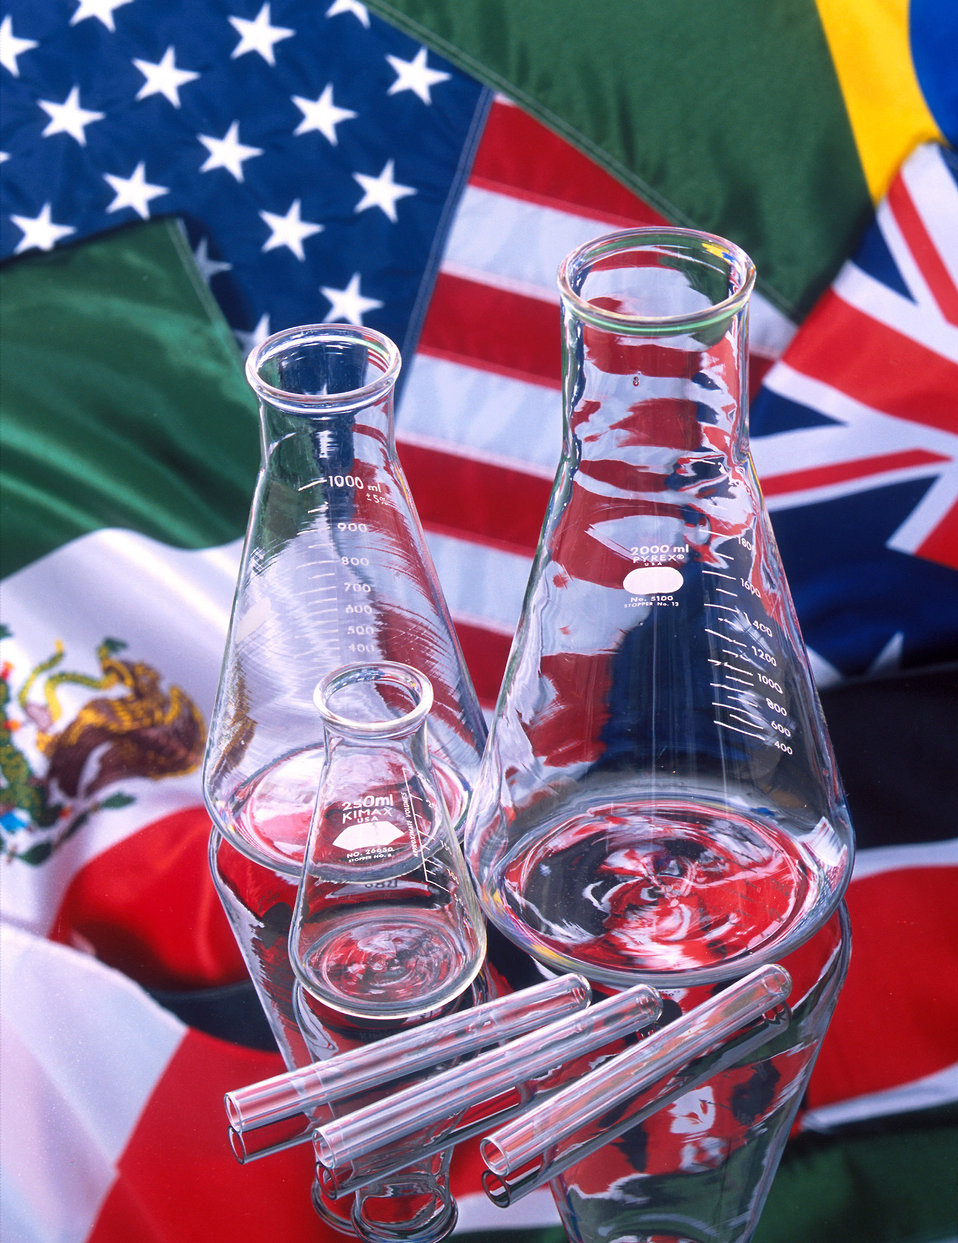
Science is an international game. U.S. Department of Agriculture (USDA) Agricultural Research Service (ARS) scientists search the world over for new solutions to the problems caused by exotic plants and insects.